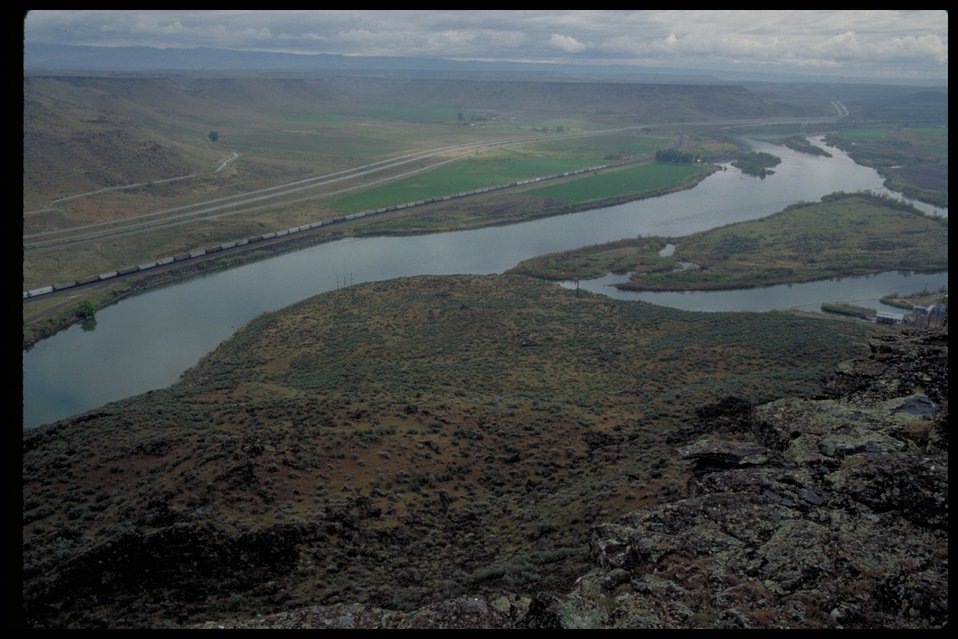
The Narrows Oregon Trail Lower Snake River District